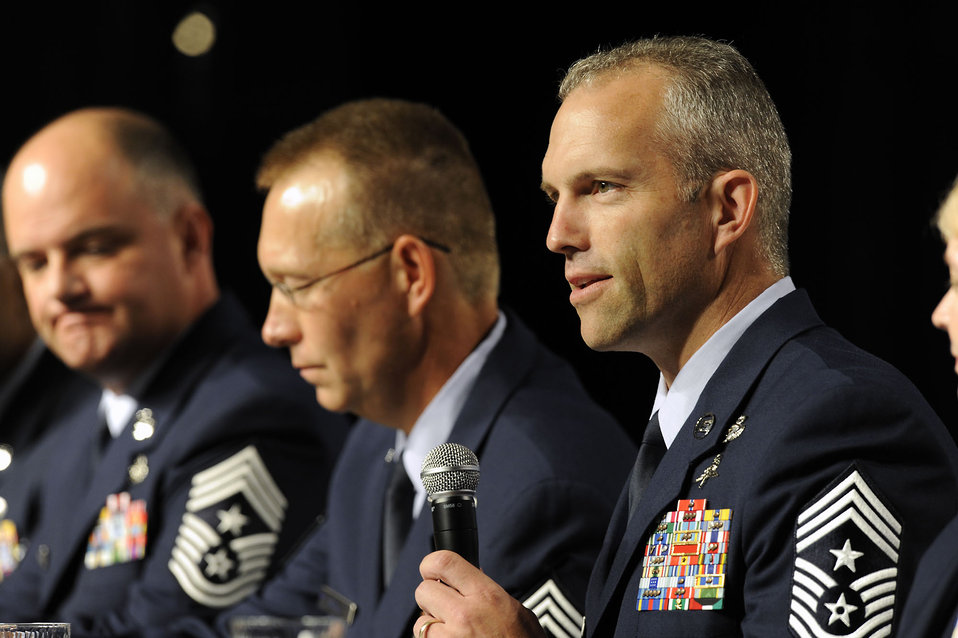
Command Chiefs Forum

Chief Master Sgt. Marty Klukas (right), command chief for Air Combat Command, answers a question Sept. 13, 2010, during a command chiefs' forum at the Air Force Association's Air and Space Conference and Technology Exposition at National Harbor in Oxon Hill, Md. The panel was led by Chief Master Sgt. of the Air Force James Roy.